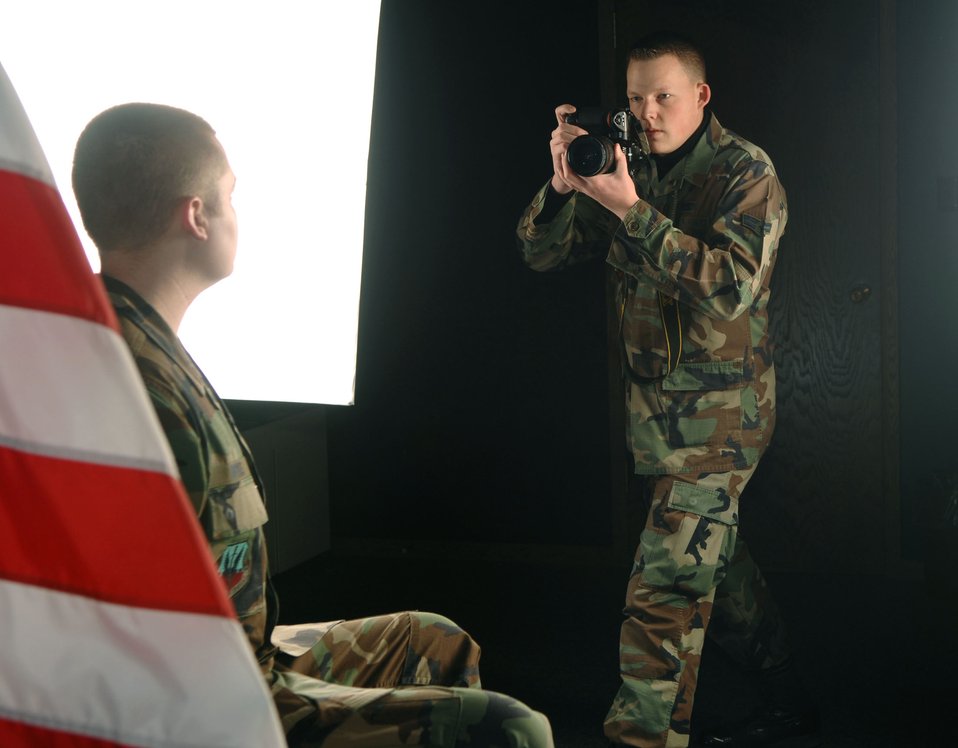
Serving through the season: Airman 1st Class Christopher Boitz

Airman 1st Class Christopher Boitz takes a studio portrait at the multimedia center at Minot Air Force Base, N.D. Airman Boitz is assigned to the 5th Communications Squadron.